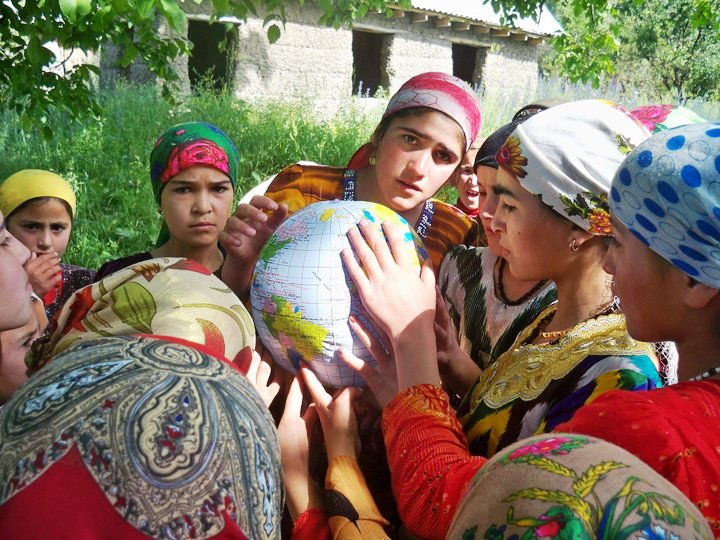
Tajik youth study the globe at Camp America, a U.S. Embassy Dushanbe-supported summer camp, in Hoyt, Tajikistan, in July 2010.